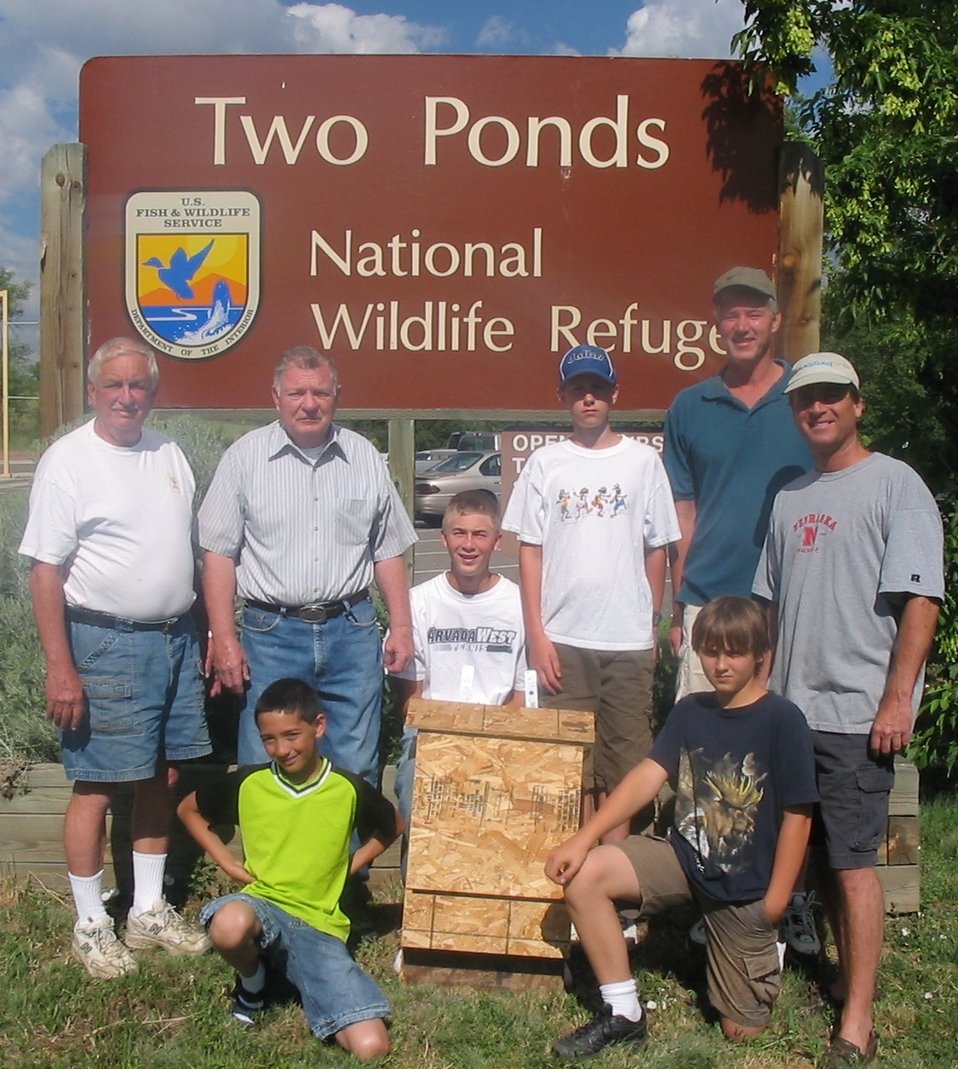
Eagle Scout - Bat Box Crew